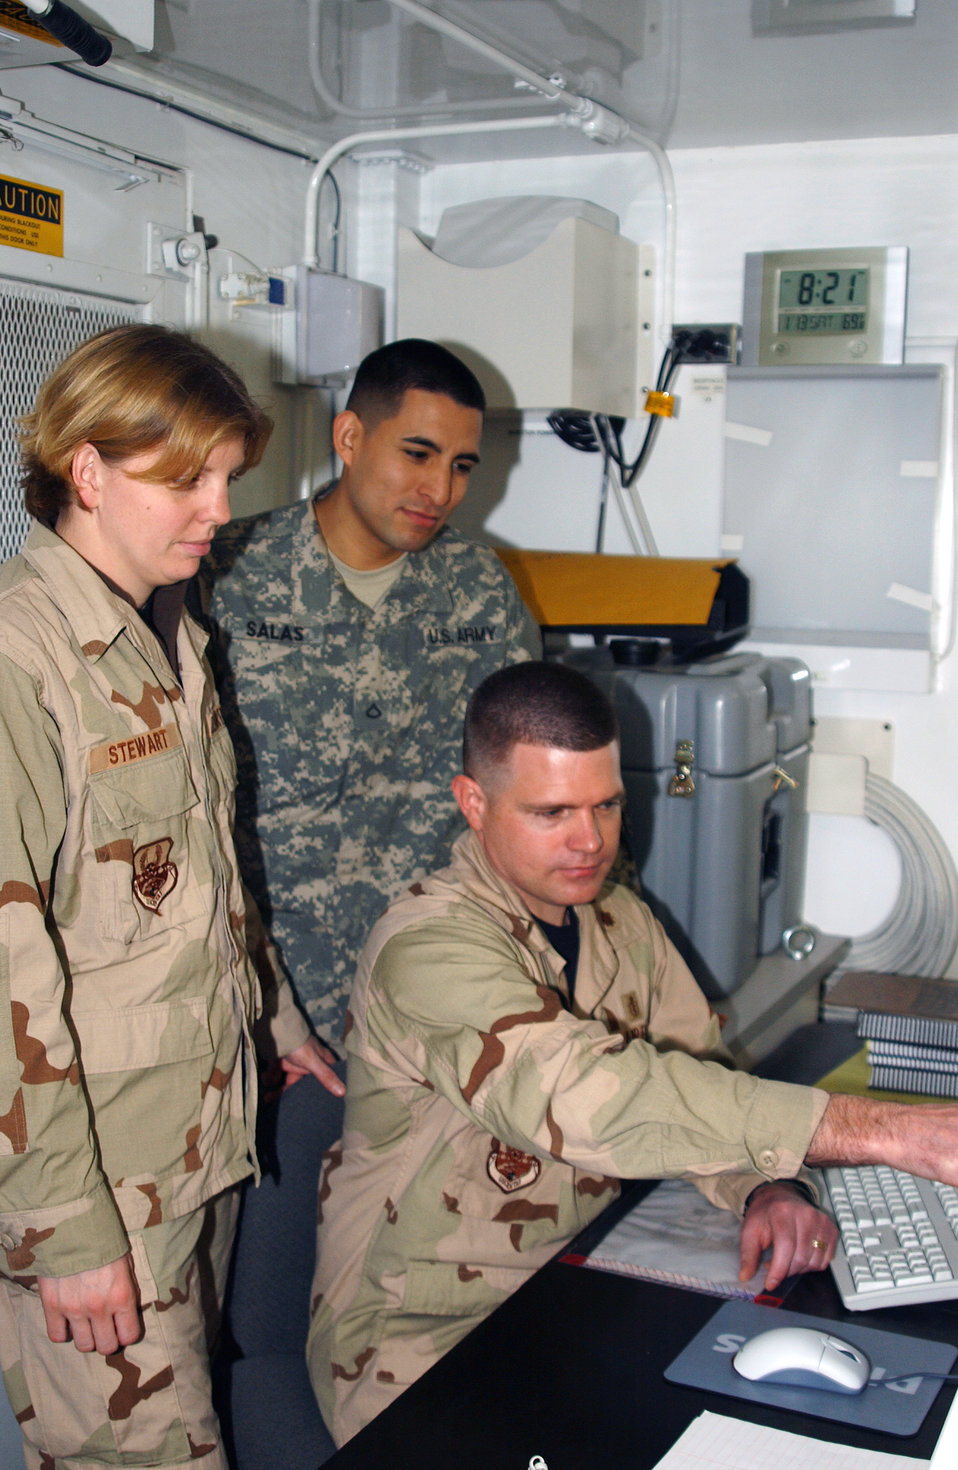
Radiology team provides critical care for battlefield injuries

Senior Airman Julie Stewart, (from left) Army Pfc. Daniel Salas, and Maj. Robert Jesinger review an X-ray at the Air Force Theater Hospital at Balad Air Base, Iraq. Airman Steward is a 332nd Expeditionary Medical Group radiology technologist, and Major Jesinger is the 332nd EMDG radiology flight commander, both deployed from Travis Air Force Base, Calif. Private Salas is a 53rd head and neck team radiology technologist deployed from Fort Lewis, Wash.